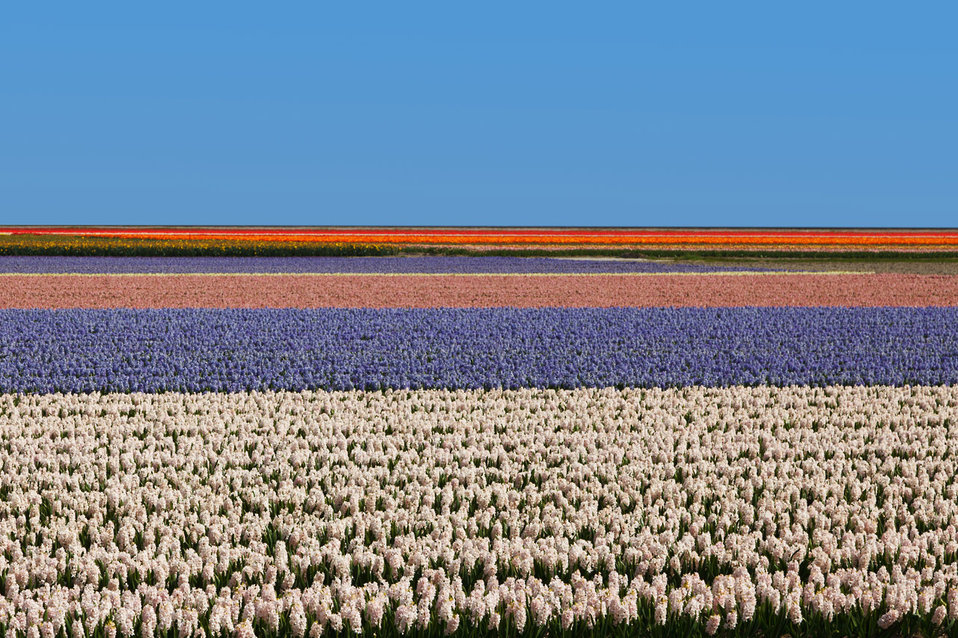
Flower field in holland

Colorful flower field with a blue sky in the background in holland.